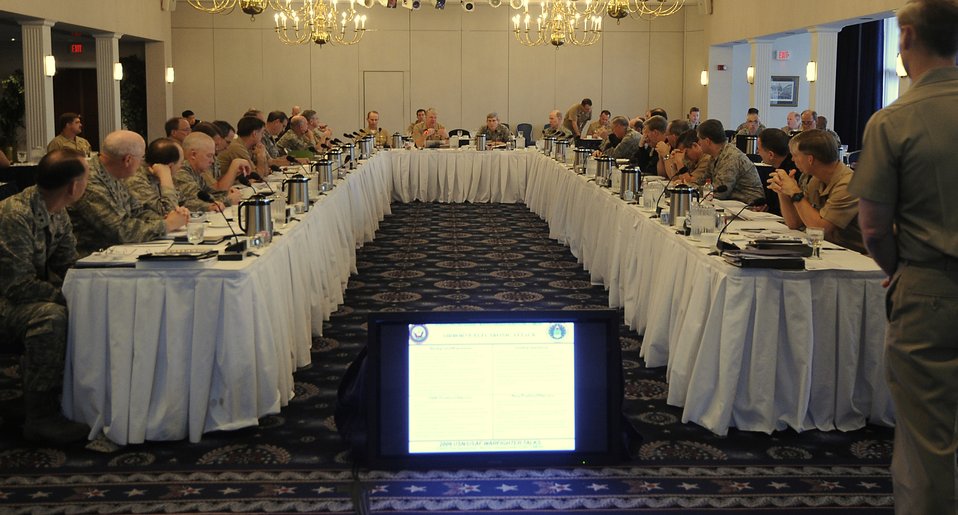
Navy-Air Force Warfighter Talks

A naval officer briefs during the Navy-Air Force Warfighter Talks Mar. 18 at Bolling AFB, D.C. About 35 senior leaders from both services attended the cross-talk session.